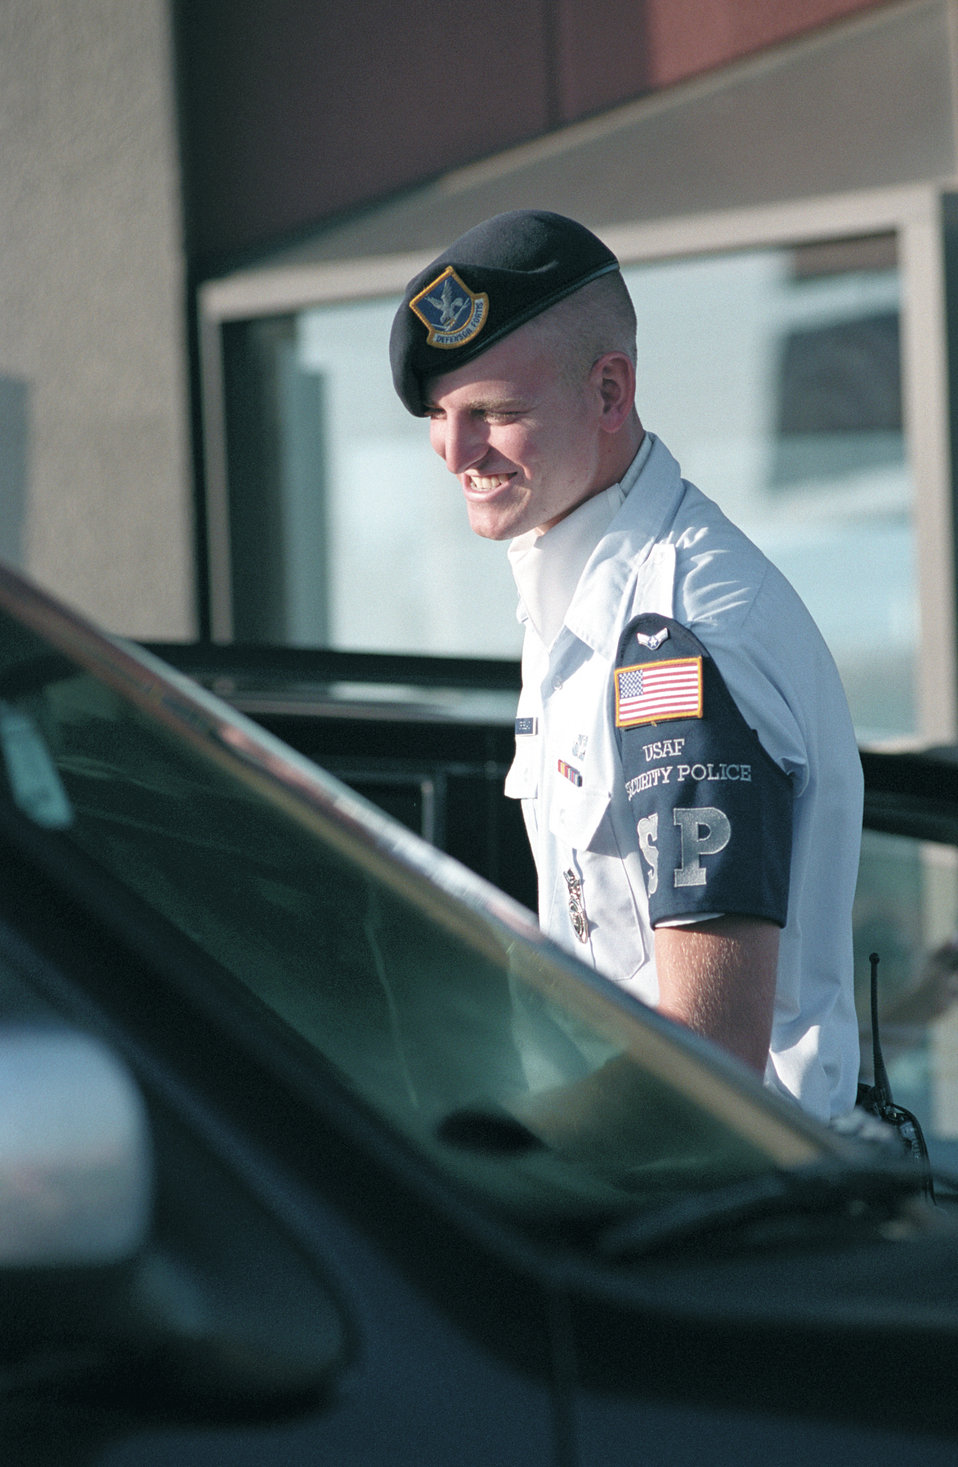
Tinker Airman greets motorists with a smile

TINKER AIR FORCE BASE, Okla. -- Airman 1st Class Ragan Crossland finds something uplifting to say to every motorist he encounters at Tinker's gates. He is assigned to the 72nd Security Forces Squadron.